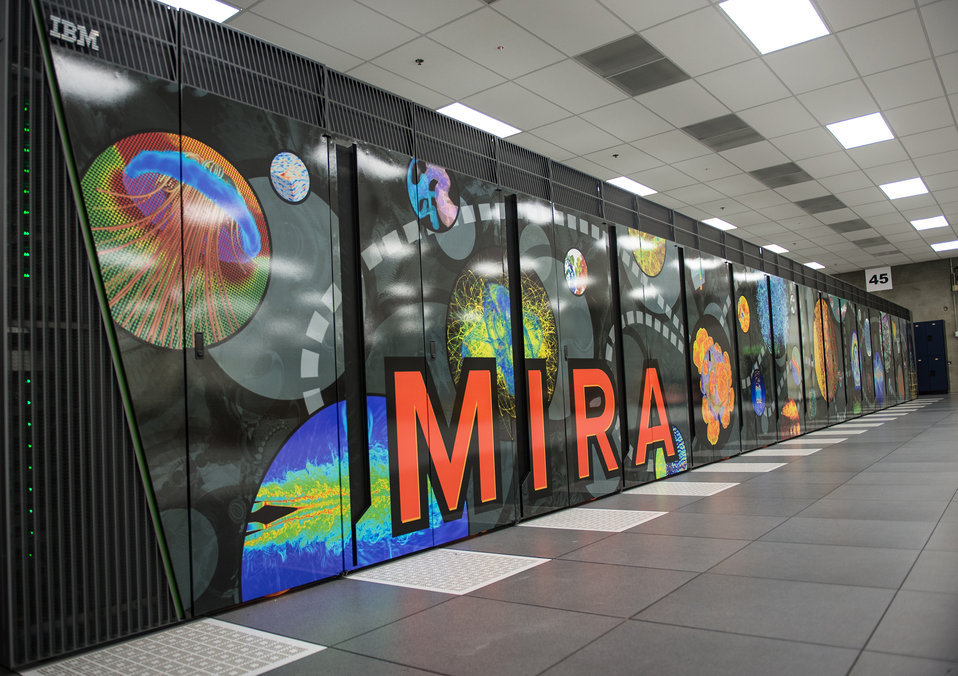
At Argonne National Laboratory, Mark Hereld, scientist/artist, has created one-of-a-kind mural showcasing the computational science done at the Argonne Leadership Computing Facility.
MIRA, the fourth-fastest supercomputer in the world, is capable of 10 petaflops.